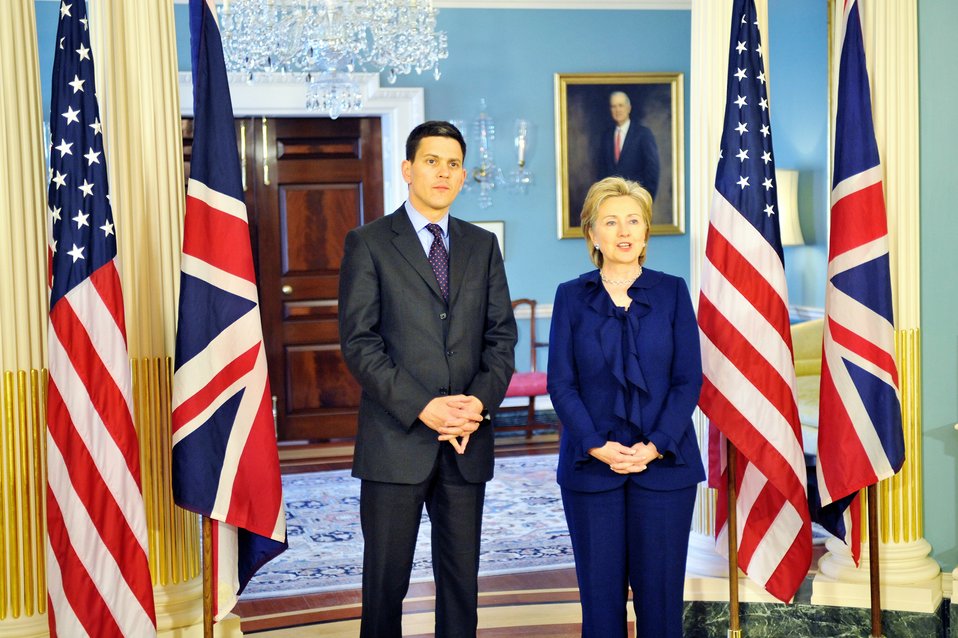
Secretary Clinton Meets With United Kingdom Foreign Minister

U.S. Secretary of State Hillary Rodham Clinton hosts a bilateral meeting with United Kingdom Foreign Secretary David Miliband in the Treaty Room of the U.S. Department of State on May 12, 2009.